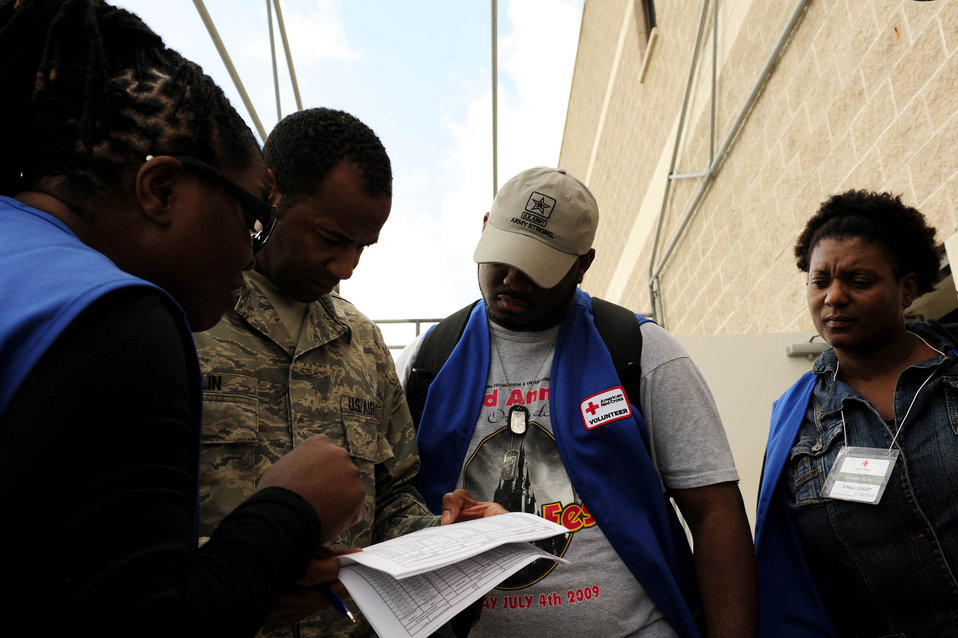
Operation Unified Response

Tech. Sgt. Charles Taplin, with the 70th Aerial Port Squadron at Homestead Air Reserve Base, Fla., shows Red Cross volunteers which aircraft they are manifested on Jan. 21, 2010, as they wait to fly to Haiti. These volunteers are translators who will help U.S. servicemembers communicate with earthquake survivors receiving medical attention.